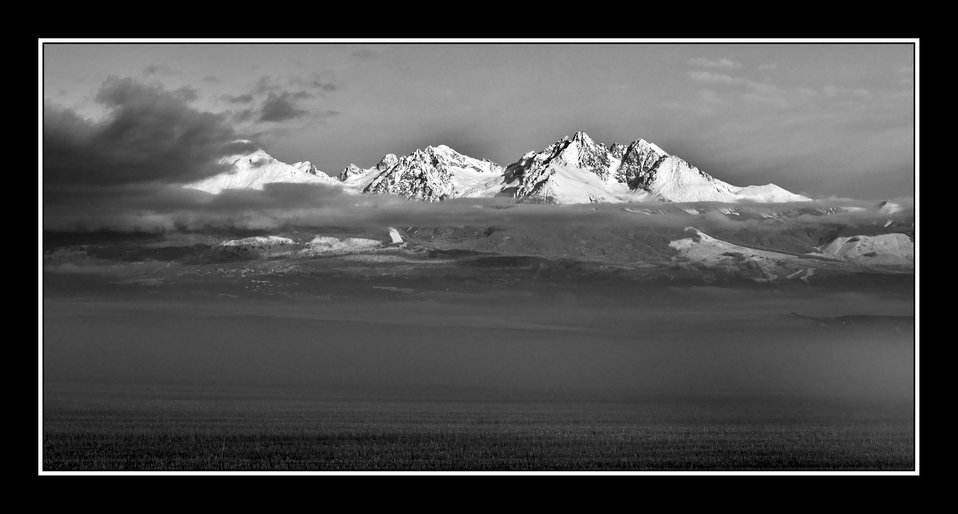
My love

High tatras - slovakia.